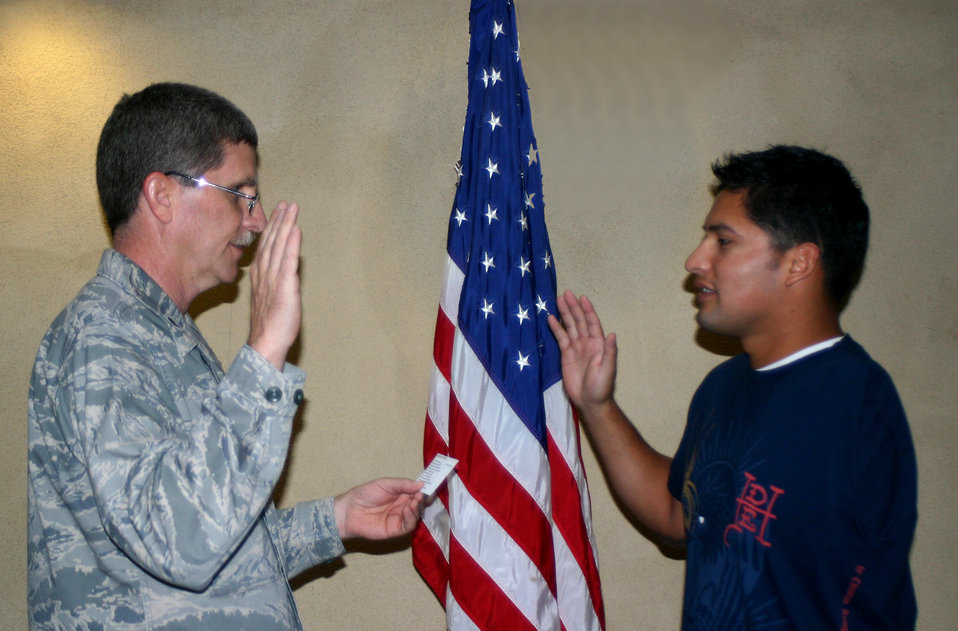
Wounded warrior receives surprise promotion

Lt. Col. Michael Glass gives the oath of enlistment to Staff Sgt. Daniel Acosta May 7 at Wilford Hall Medical Center on Lackland Air Force Base, Texas. Sergeant Acosta, an Air Force wounded warrior, received a surprise promotion to staff sergeant, effective Nov. 1, 2008. Colonel Glass is the 59th Medical Support Squadron commander.